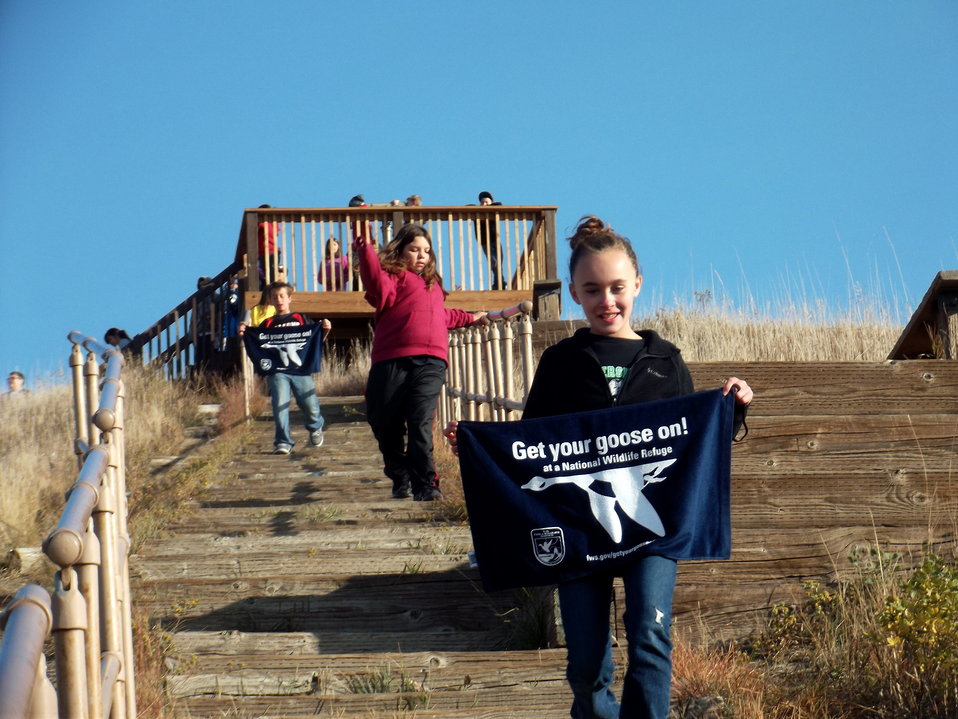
Get Your Goose On!

Photo taken at Sullys Hill National Game Preserve.